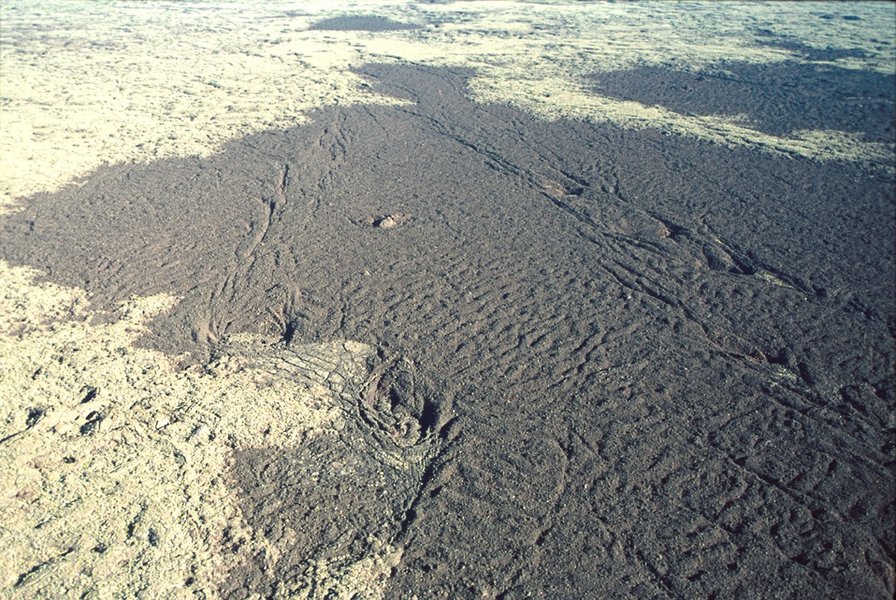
Craters of the Moon National Monument Shoshone Field Office USRD Upper Snake River District